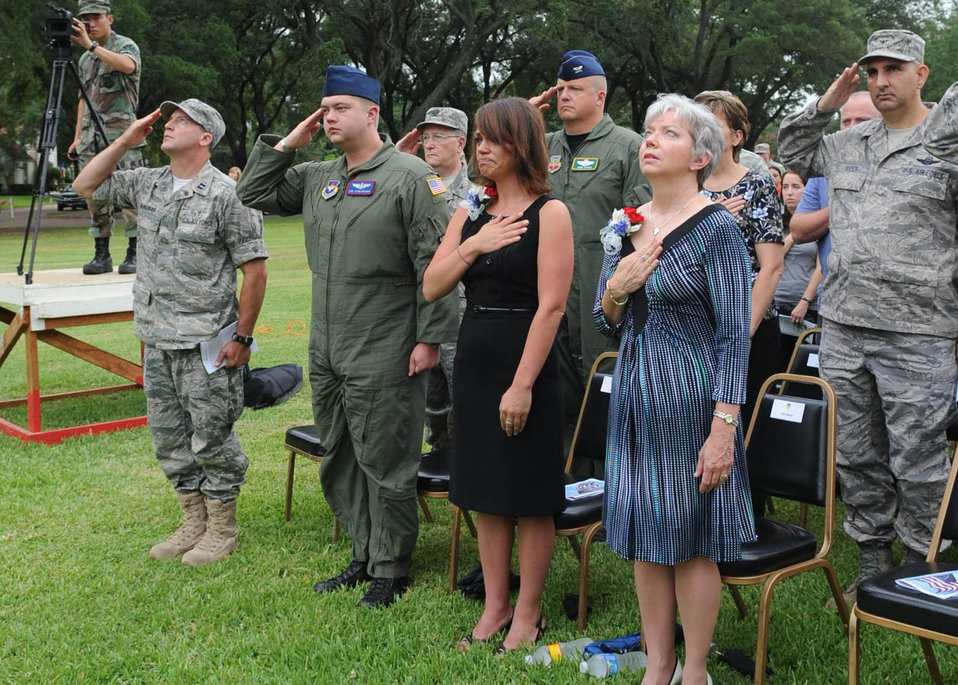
Remembering RAIDR 21

Family members, friends and Airmen at Barksdale Air Force Base, La., render courtesies as the flag is raised at the 2nd Bomb Wing flag pole July 21 during the RAIDR 21 Remembrance Ceremony. The ceremony was held to remember the six fallen aircrew members who died in a crash July 21, 2008, while deployed to Andersen AFB, Guam. The call-sign of their B-52 Stratofortress was RAIDR 21.